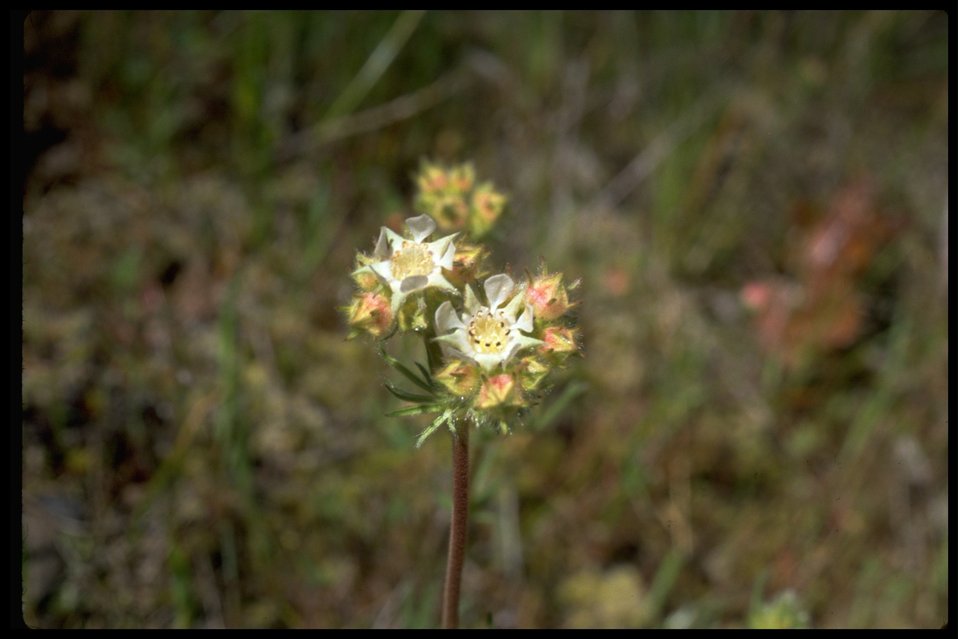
Medium shot of dense-flowered horkelia (Horkelia congesta ssp. congesta).